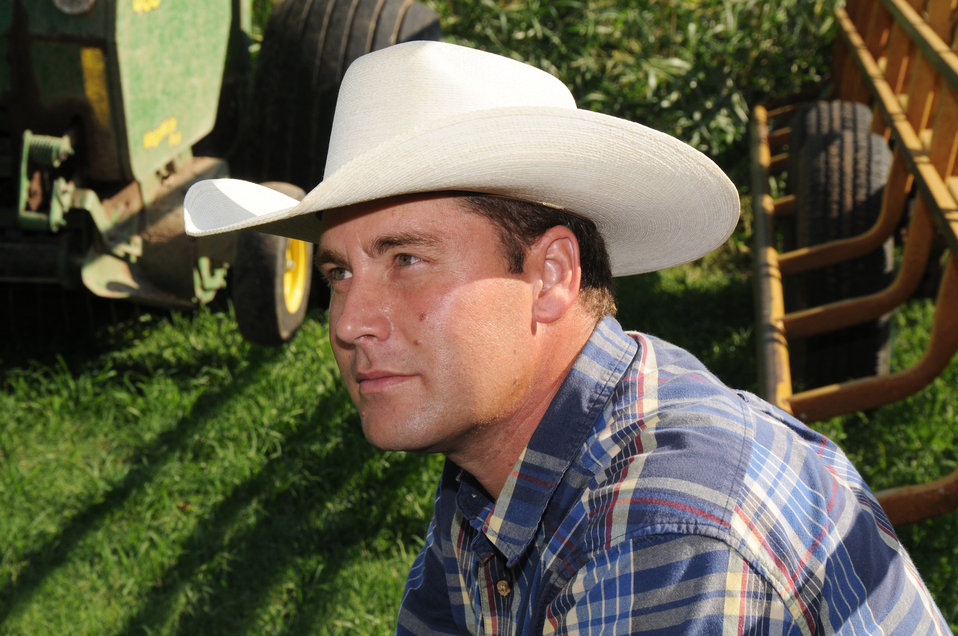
New young farmer Steve Burris looks out over his farm on August 13, 2009. Burris has always been a strong believer that farms should remain in the family, passed down from generation to generation. His conviction became a reality for his own family recently when his father-in-law decided to retire after 69 years, and to sell Burris the property his family had grown up on and farmed. Burris decided to apply at his local U.S. Department of Agriculture (USDA) Farm Service Agency (FSA) county office in McLoud, Oklahoma for both a Beginning Farmer and Rancher Direct Operating Loan (DOL) and Ownership Loan (OL). Due to the passage of the American Recovery and Reinvestment Act (ARRA) Burris received his loan in record time. The DOL helped him purchase the existing farm equipment, including a tractor and creep feeder, from his father-in-law and to pay off the remaining debt he held on the farm equipment he already owned. He purchased 65 cows from a private seller in a neighboring town and the loan allowed him to use some of his personal savings to purchase feed, and fertilizer for his winter wheat crop from a local vender. Burris’s OL was also approved, which enabled him to purchase the farm's existing home and 55 acres from his father-in-law. Burris was a high school agricultural education instructor for seven years, having earned his bachelors degree in agriculture science from Oklahoma State University. He is happy to be more involved in daily farming and splits his time breeding cattle with his wife Kathy and four children, and working as an agent for the local Farmer's Insurance Group office.